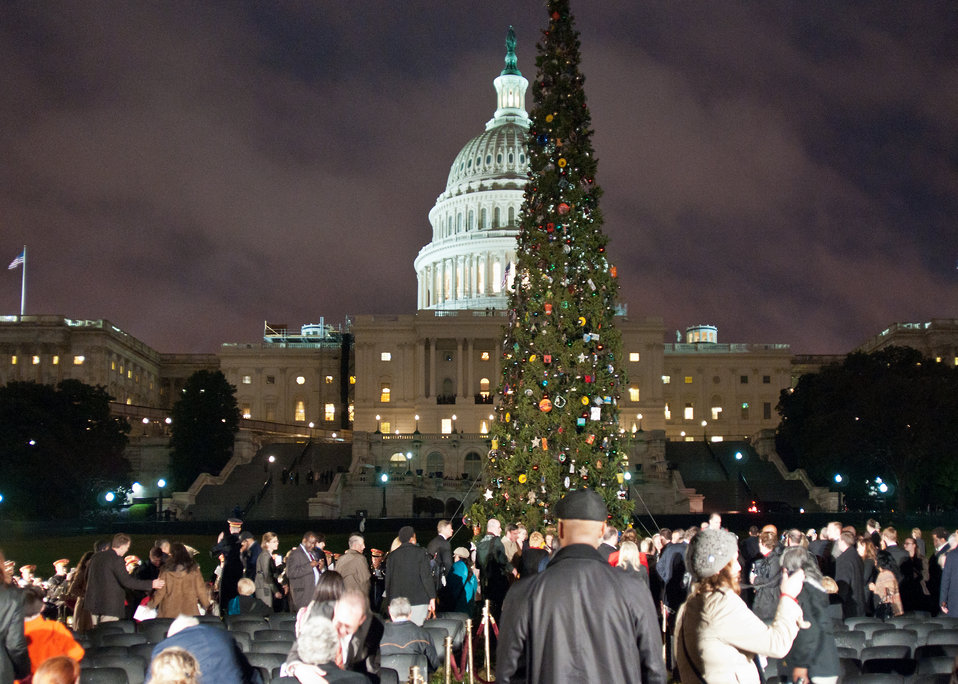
The Capitol Christmas Tree lighting ceremony was held on Tuesday, December 6, 2011 on the West lawn of the U. S. Capitol in Washington, D.C. In 1970 the Architect of the Capitol approached the United States Department of Agriculture Forest Service for assistance in providing a Capitol Christmas Tree; and since then, it has been an honor for one of our country’s National Forests to produce a tree for the holiday’s. 2011 will be the fourth time California has contributed the U.S. Capitol Christmas Tree. Known as 'The People’s Tree', the 2011 Capitol Christmas Tree is a 63 ft., 118 year old, Sierra White Fir harvested from the Stanislaus National Forest in the Central Sierra Nevada Mountains of California. During the seven day tour of California in November citizens collected non-perishable food items to demonstrate the goodwill and generosity of California's people to share with those less fortunate during the holiday season.